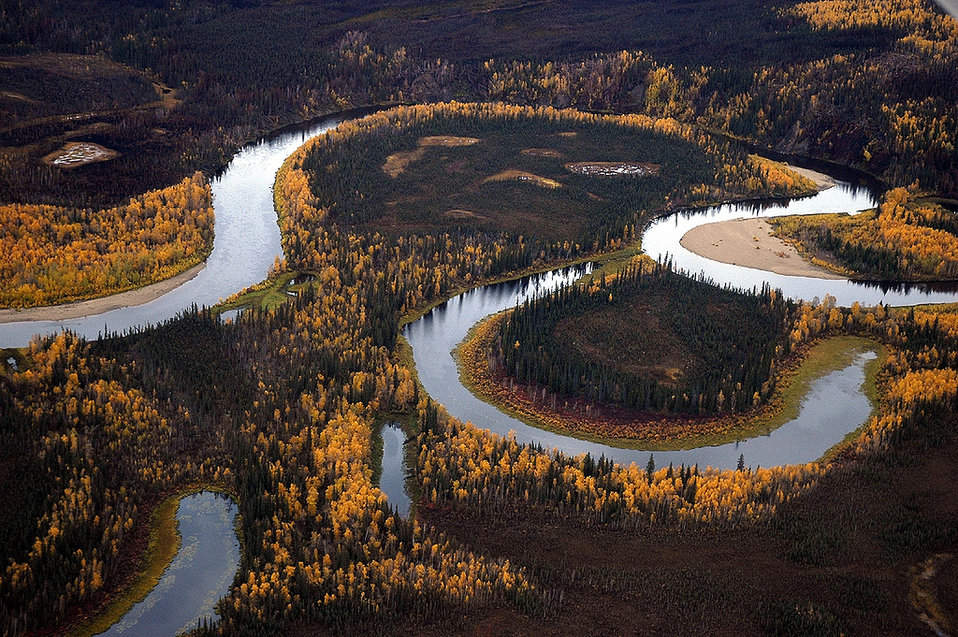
oxbows

The Kanuti River winds through banks of golden trees in autumn on the Kanuti National Wildlife Refuge in Alaska.